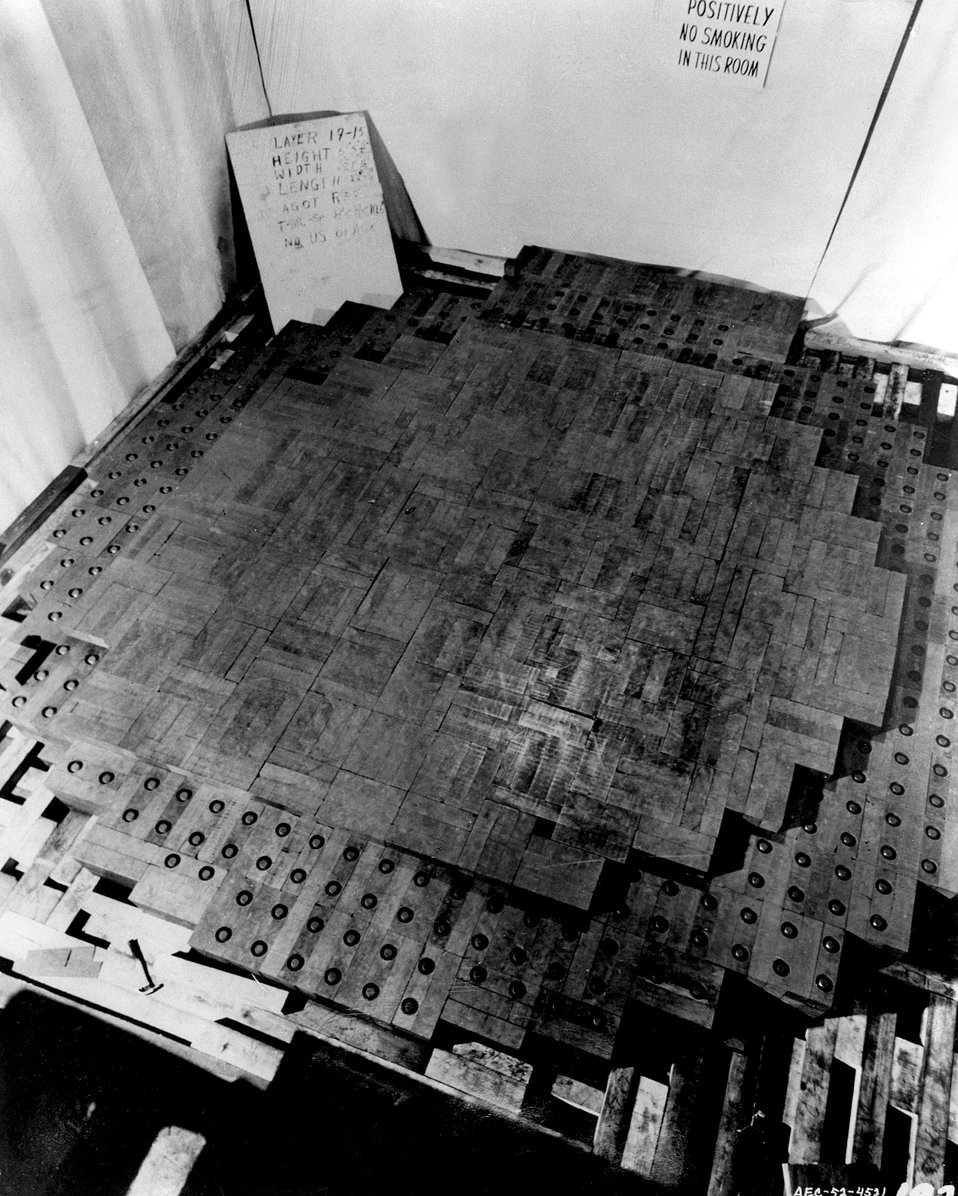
This is the only photograph made during the construction of the first nuclear reactor.